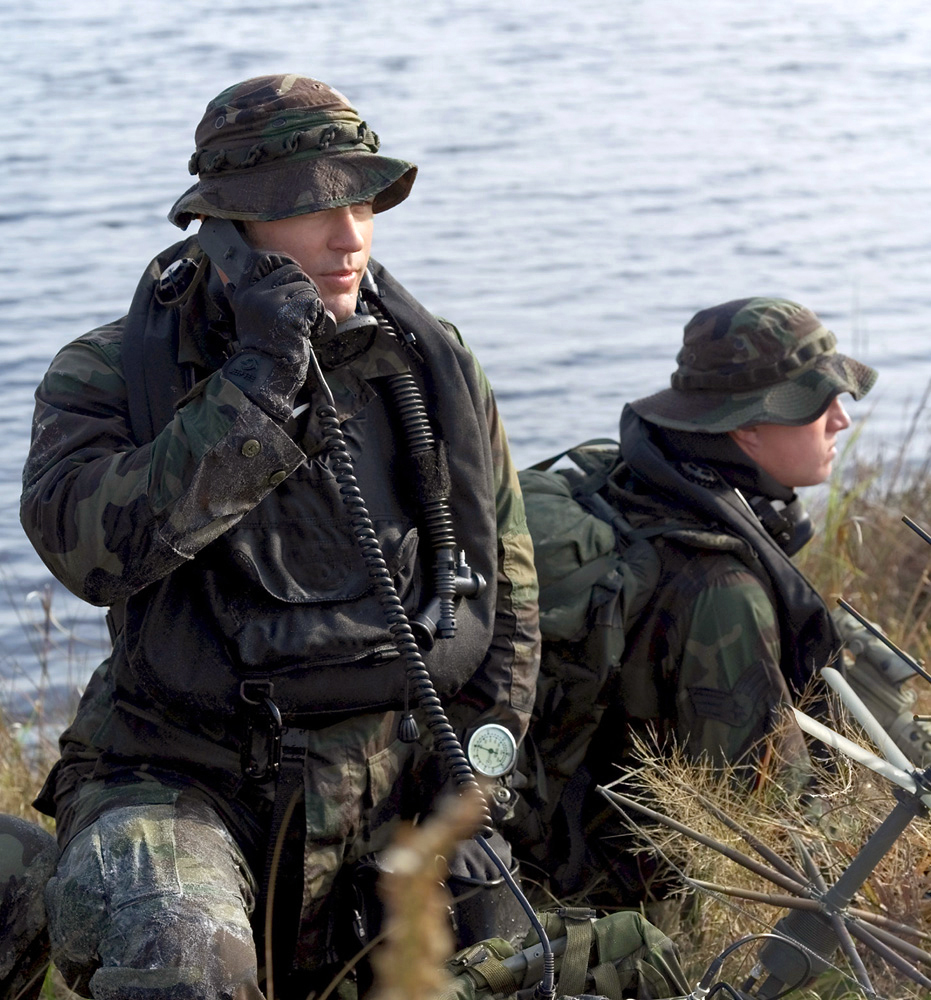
Training, teamwork prepare combat controllers for war

Combat controllers are trained special operators and certified Federal Aviation Administration air traffic controllers. They deploy undetected into combat and hostile environments to establish assault zones or airfields and then provide air traffic control and fire support in the joint arena. As the only air liaison for special forces units on the ground, combat controllers are relied on by their teammates. In turn, they rely upon air assets to deliver when called.